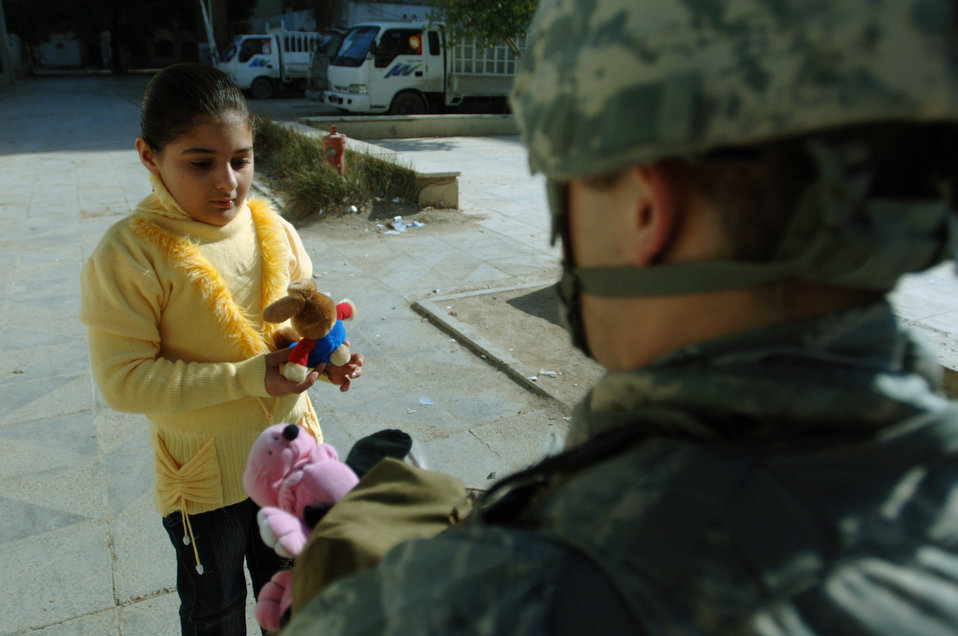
Airmen foster community relations in International Zone

A young Iraqi girl in an apartment complex accepts toys from an Airman of the 732nd Expeditionary Security Forces Squadron Det. 4 Jan. 10 inside the International Zone of Baghdad, Iraq. The items were gathered by a group of volunteer servicemembers at Joint Base Balad, Iraq, called the Kids of Iraq. The items come from donators in the United States.